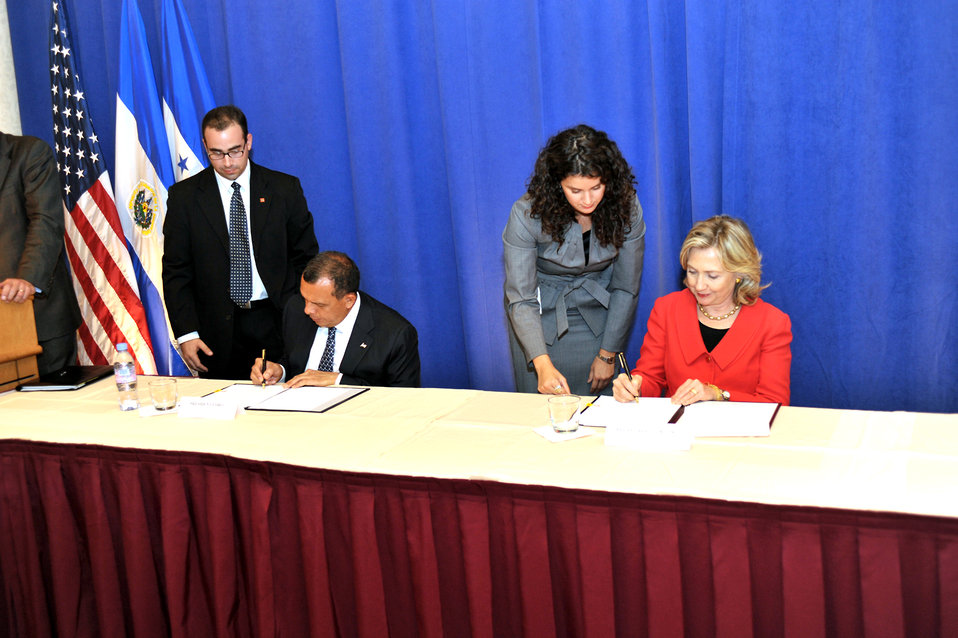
Secretary Clinton and Honduran President Lobo Sign a Memorandum of Understanding

U.S. Secretary of State Hillary Rodham Clinton and Honduran President Lobo sign a memorandum of understanding for the Building Remittance Investment for Development Growth and Entrepreneurship (BRIDGE) Initiative with Honduras and El Salvador at the Helmsley Hotel in the Turtle Bay Room in New York, New York, on September 22, 2010.